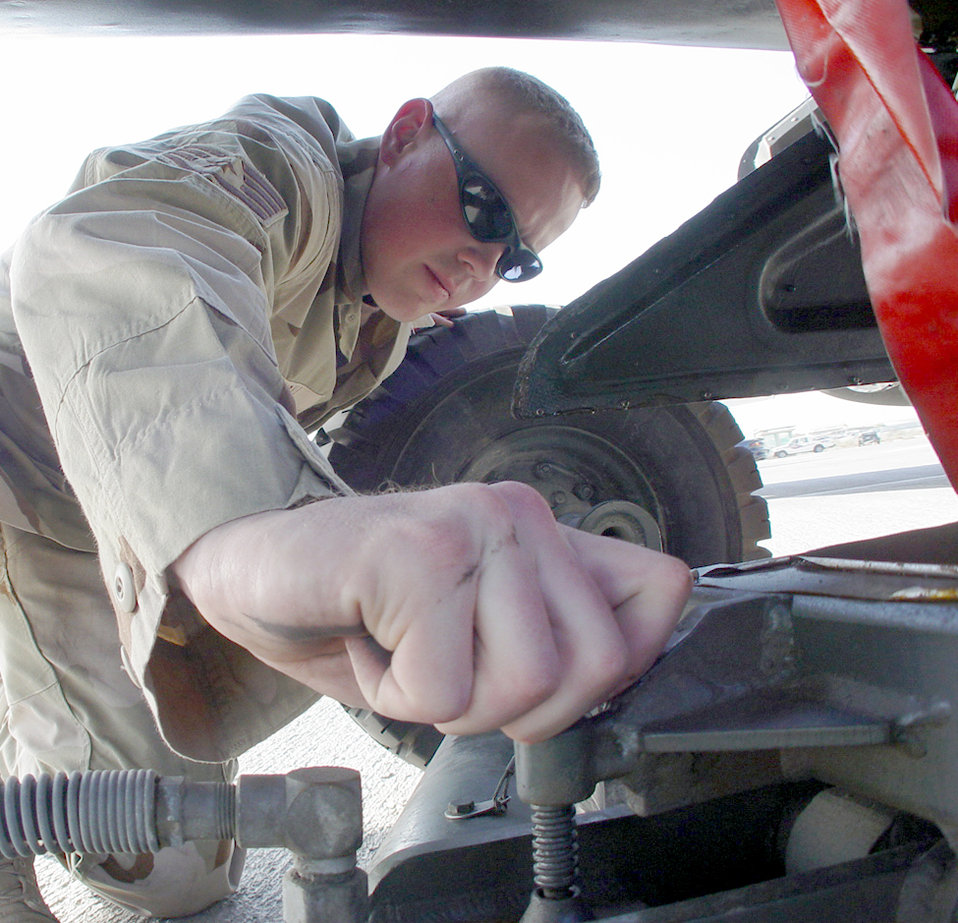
Getting hitched

SOUTHWEST ASIA -- Staff Sgt. Jeremy Randal secures an aircraft tow hitch to a U-2 Dragon Lady here Feb. 5. The U-2 is a high-altitude, multi-intelligence reconnaissance aircraft that can fly above 70,000 feet. The jet provides near-real-time imagery and signals intelligence to warfighters and national authorities. Sergeant Randal is a crew chief with the 380th Expeditionary Aircraft Maintenance Squadron and is deployed from Beale Air Force Base, Calif.